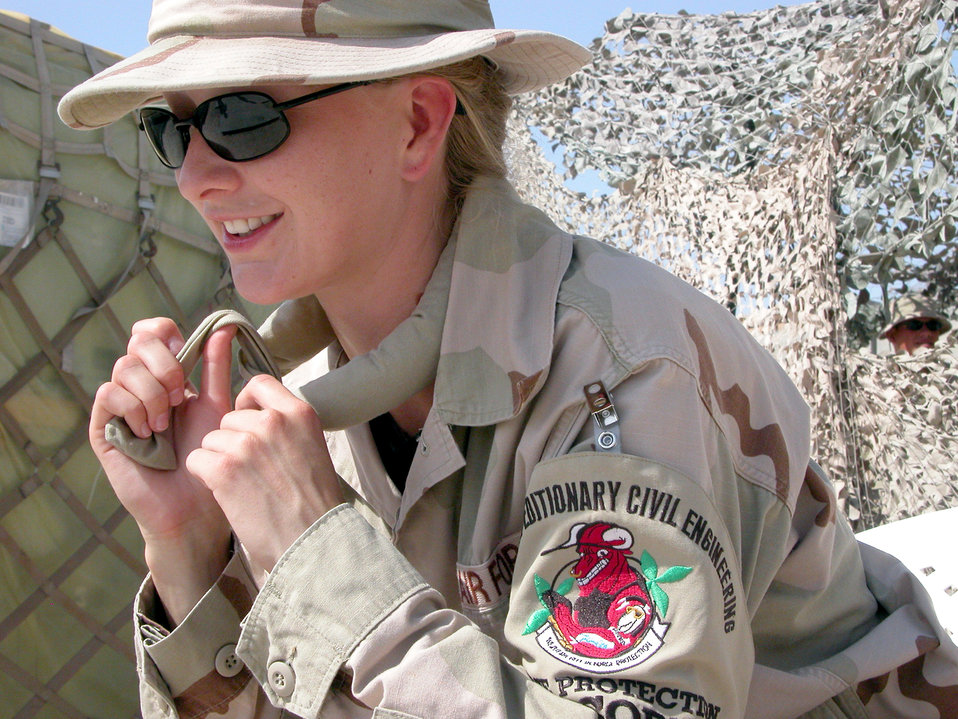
Cool it!

SOUTHWEST ASIA -- Senior Airman Danielle Clark ties on a